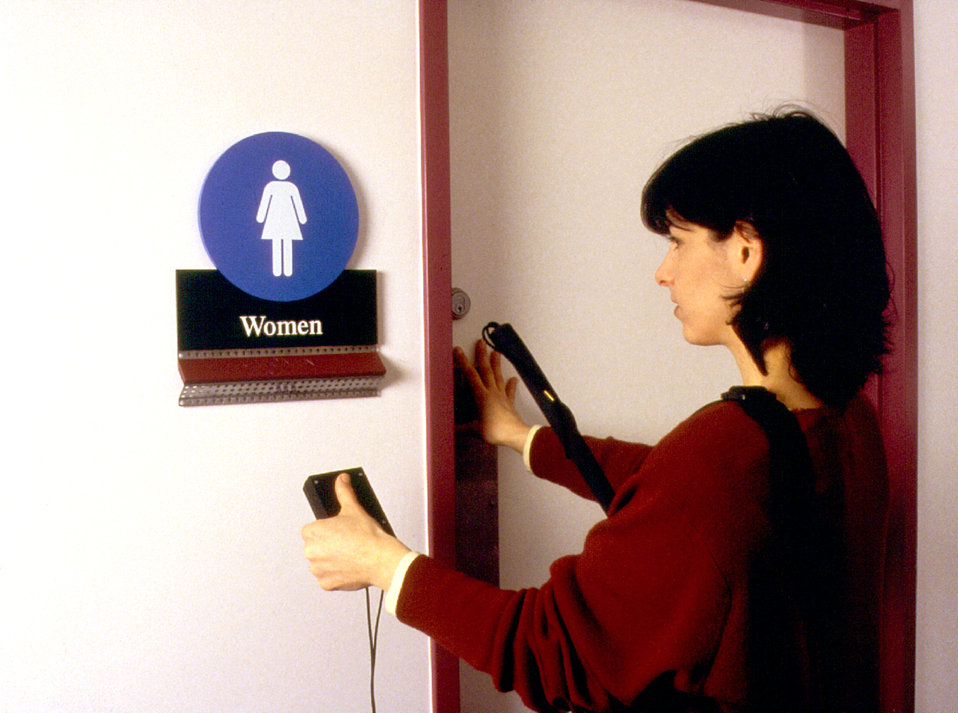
The visually-impaired woman in this image was depicted interacting with a restroom sign indicating that it was a women's restroom, through its use of a large, blue, readily visible universal sign describing 'woman'. Included in the signage was an auditory output device, which improved the ability for the sign to impart its message to a much greater degree. This was one of a series of images provided by North Carolina State University's Center for Universal Design. 'The Center for Universal Design is a national research, information, and technical assistance center that evaluates, develops, and promotes universal design in housing, public and commercial facilities, and related products.' See PHIL# 9008 for a closer view of a men's room and stairwell sign.